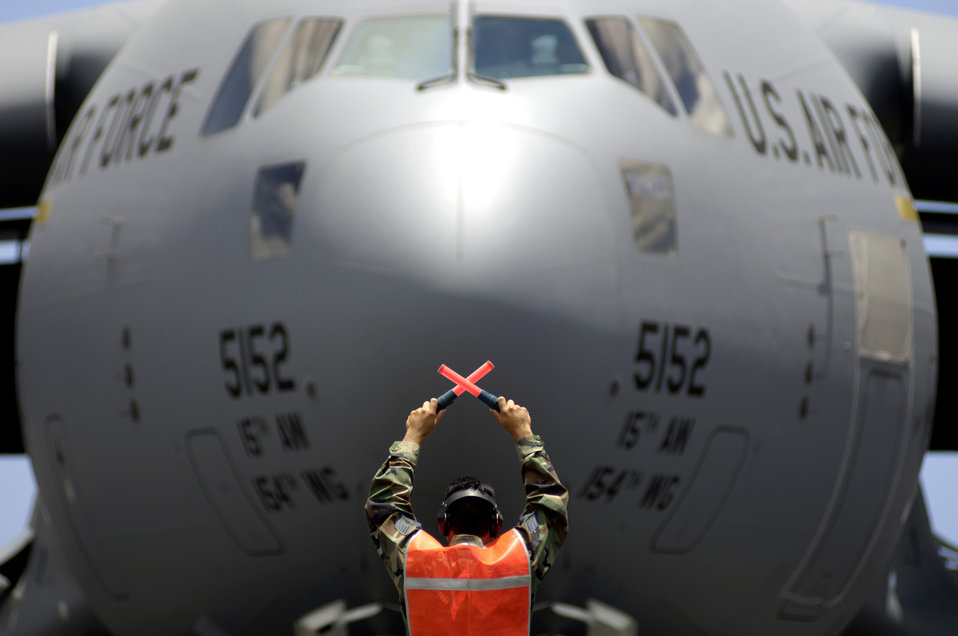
Hickam honors World War II vets

Tech. Sgt. Ronald Timbreza marshals a C-17 Globemaster III to its parking spot at Hickam Air Force Base, Hawaii, on Wednesday, June 14. The